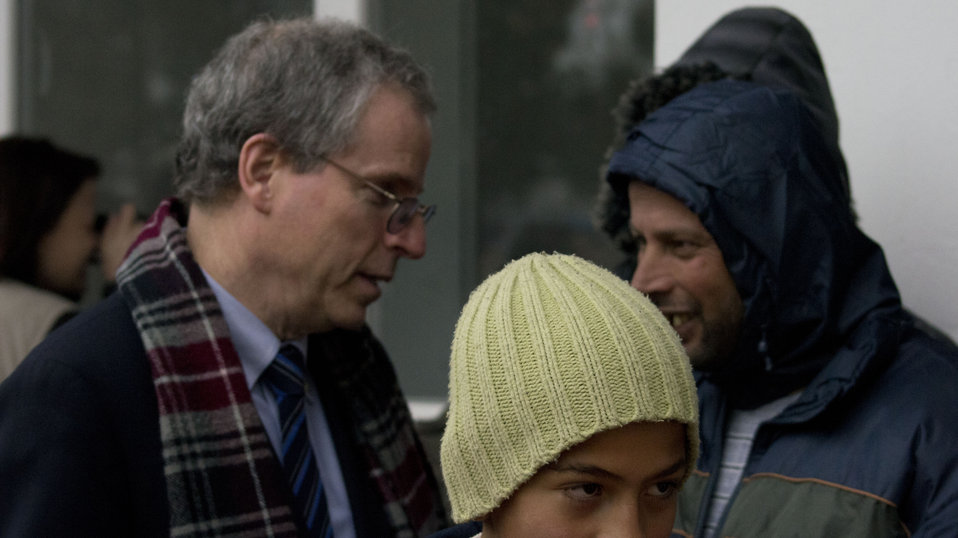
Ambassador Ford Interacts With Syrian Refugees

U.S. Ambassador to Syria Robert Ford interacts with Syrian refugees at Islahiye Refugee Camp in Turkey on January 24, 2013.